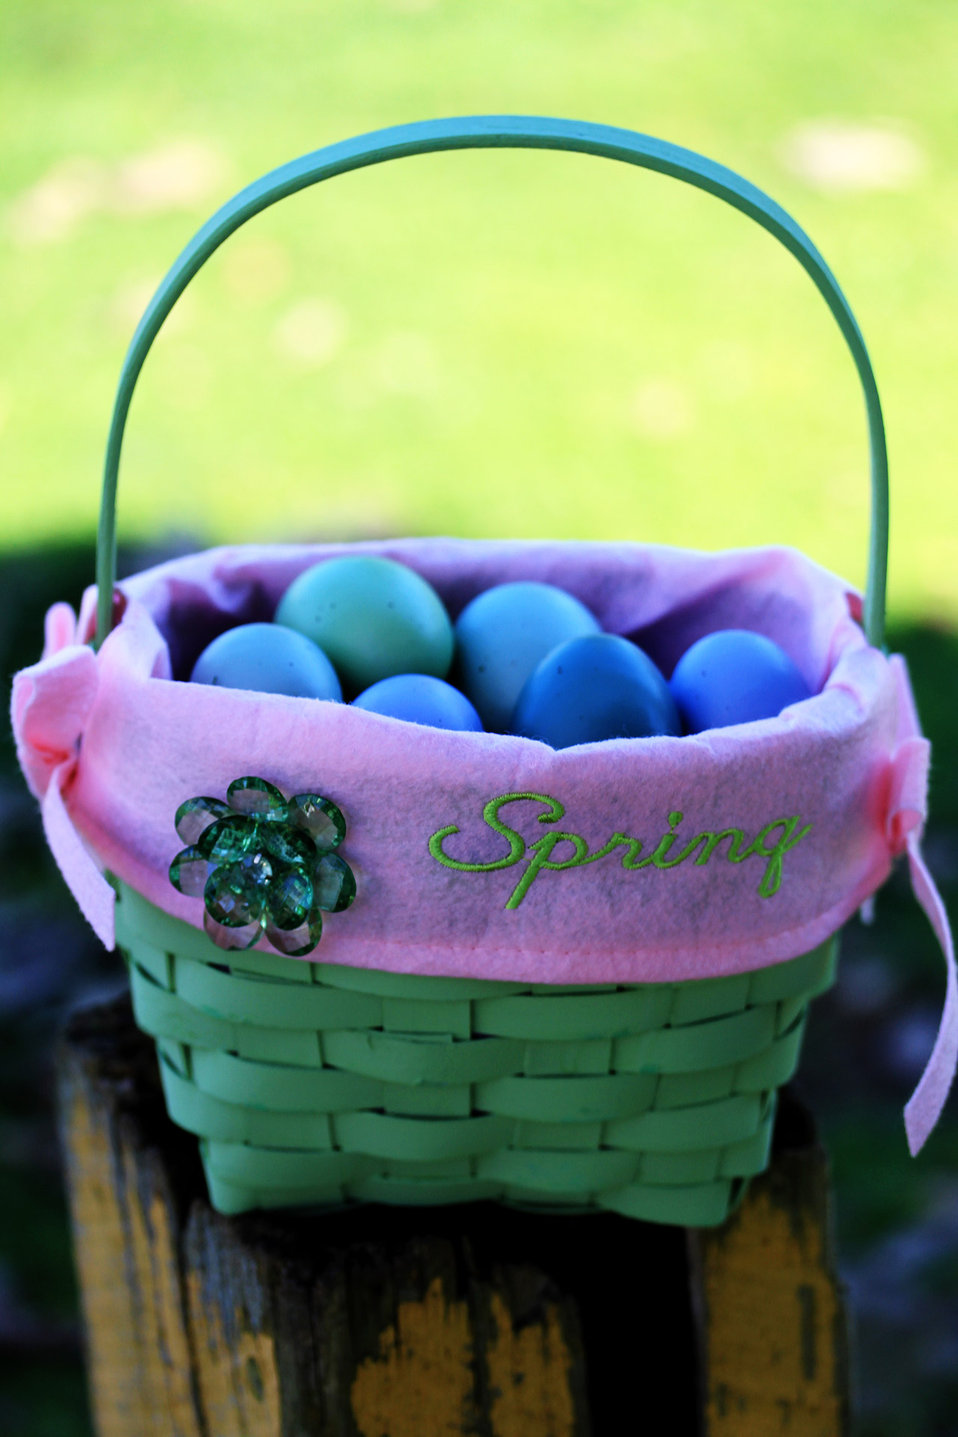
Easter basket

An easter basket with eggs.